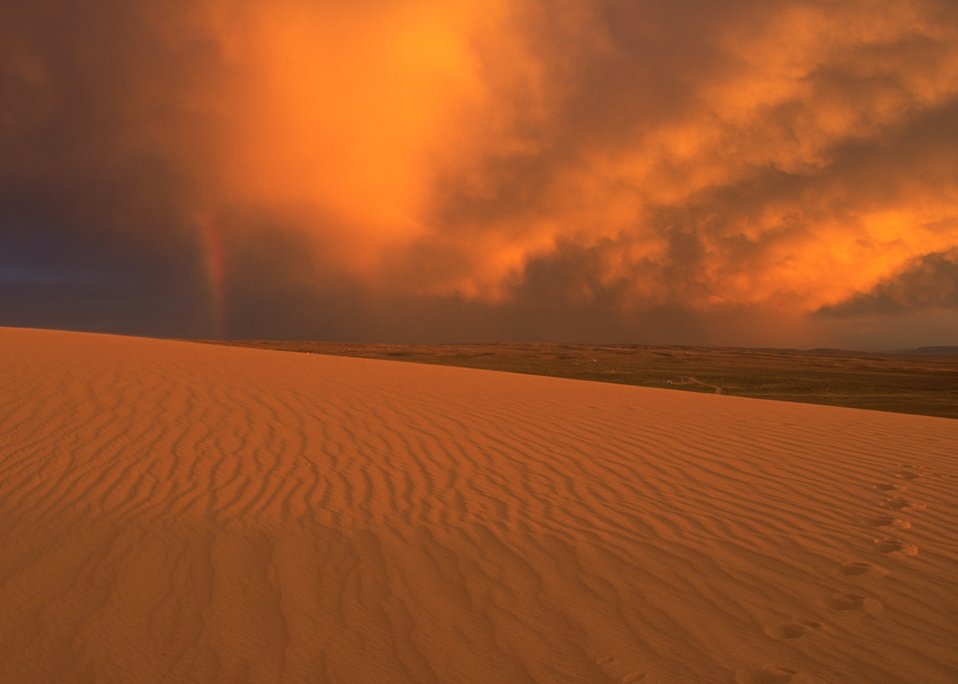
Passing storm at sunset over OHV Sand Dunes Area, Rock Springs Field Office.